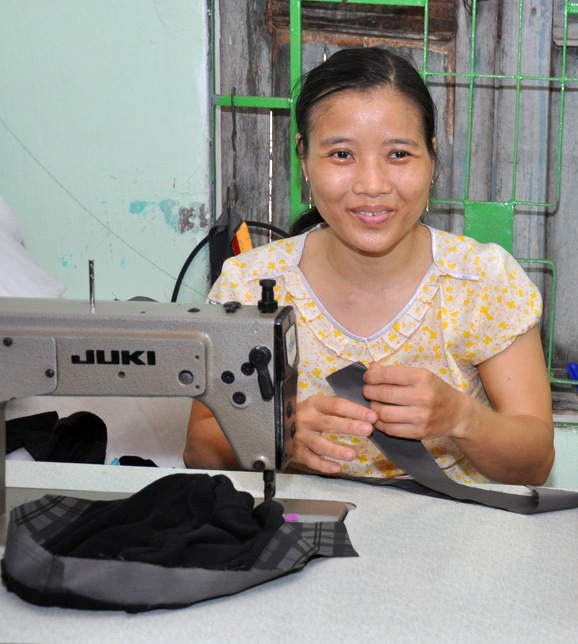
USAID supports training on livelihood skills for persons with disabilities in Danang.

Danang, June 10, 2013.